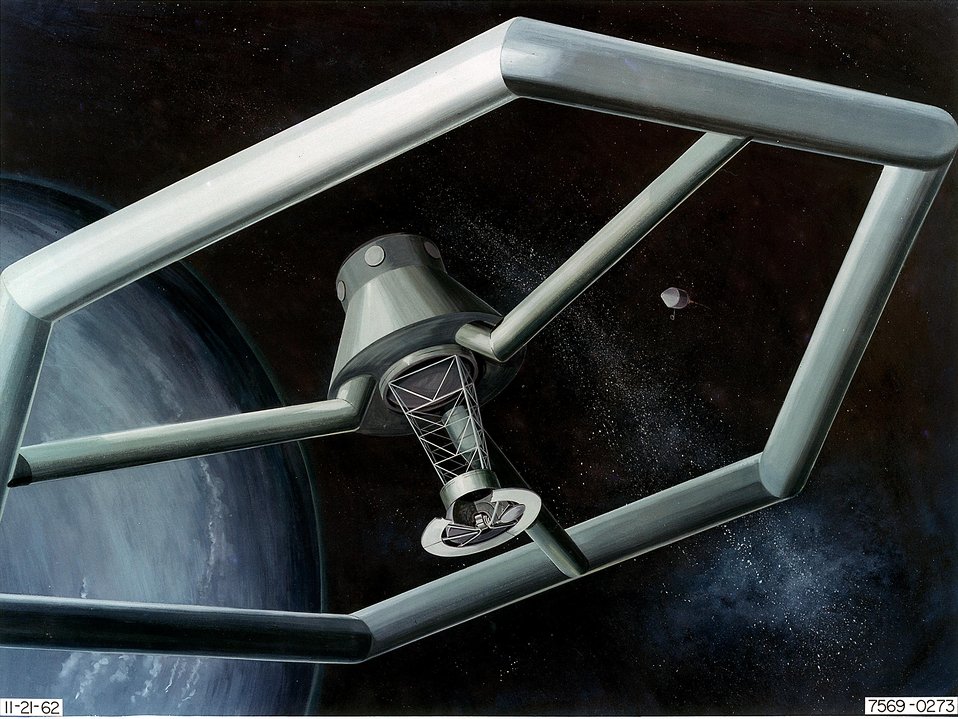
SNAP 10A space station